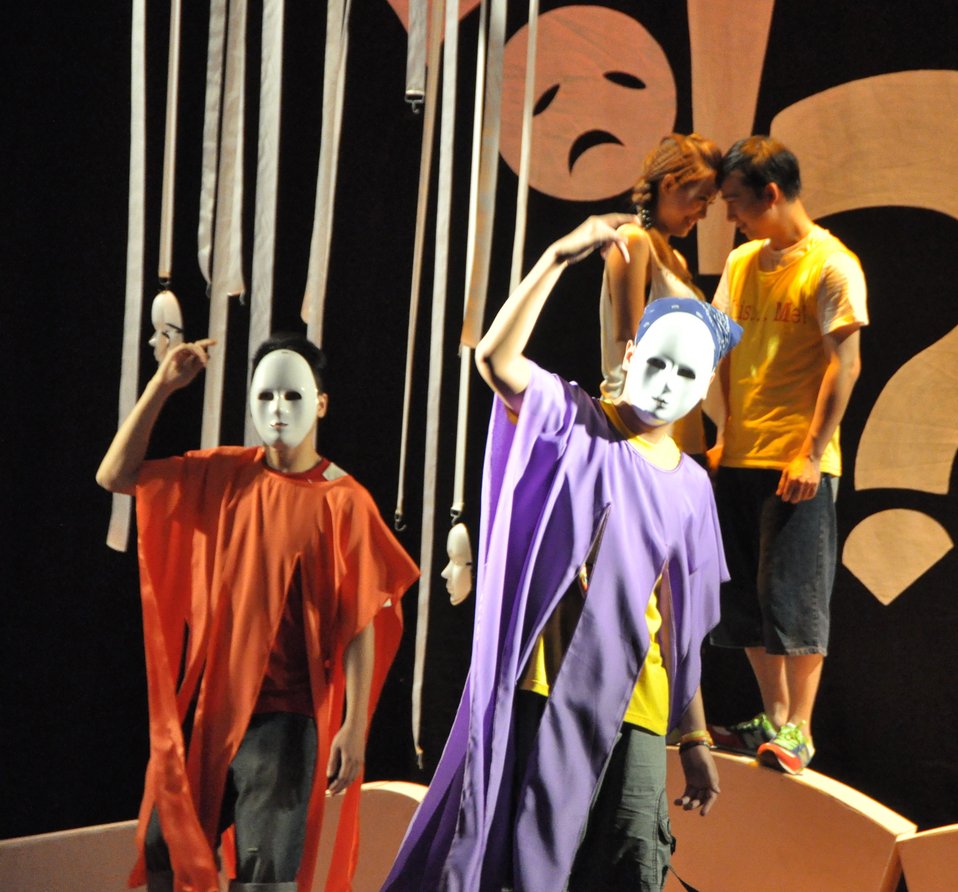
PEPFAR Musical Questions and Exclamations

Hanoi, May 17, 2013